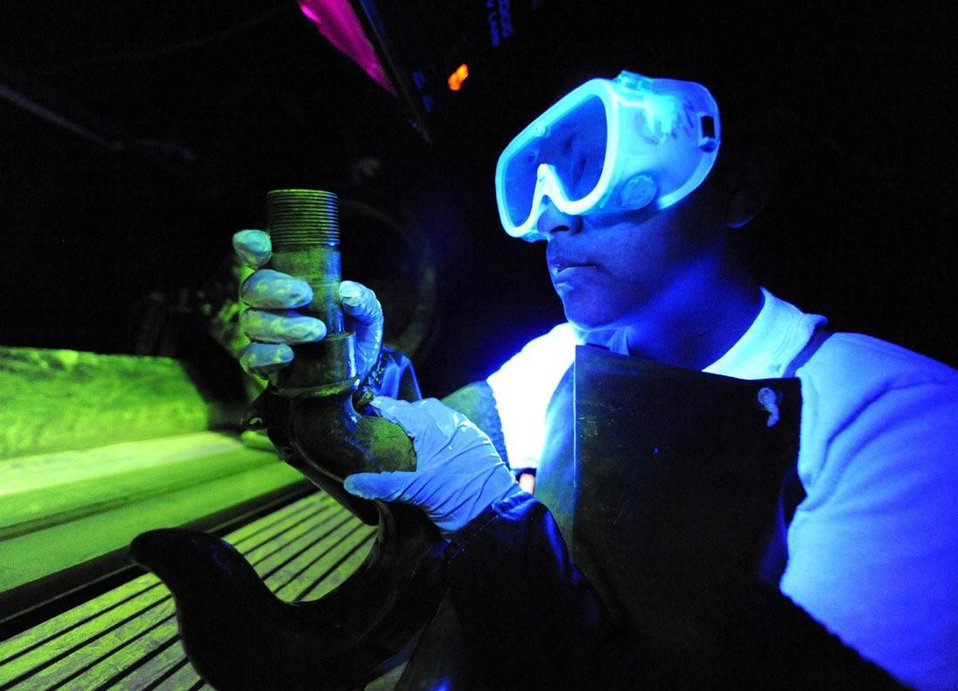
It's good to be green

Senior Airman Lilia Linares uses a fluorescent magnetic particle process to inspect an aerospace ground equipment hook for cracks May 27 at Charleston Air Force Base S.C. The nondestructive inspection section inspects more than 40,000 pieces of weapon systems and non-weapon systems assets a year. Airman Linares is a nondestructive inspection journeyman with the 437th Maintenance Squadron.